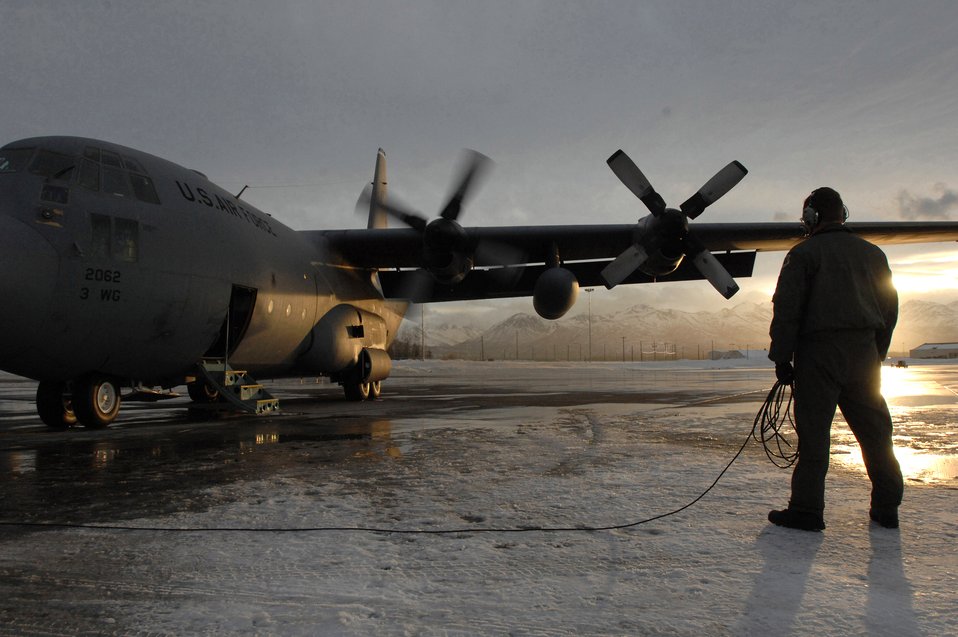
By the dawn's early light

An Airman directs engine start-up on a C-130 Hercules prior to an training mission Feb. 1 from Elmendorf Air Force Base, Alaska. The C-130 belongs to the 517th Airlift Squadron.